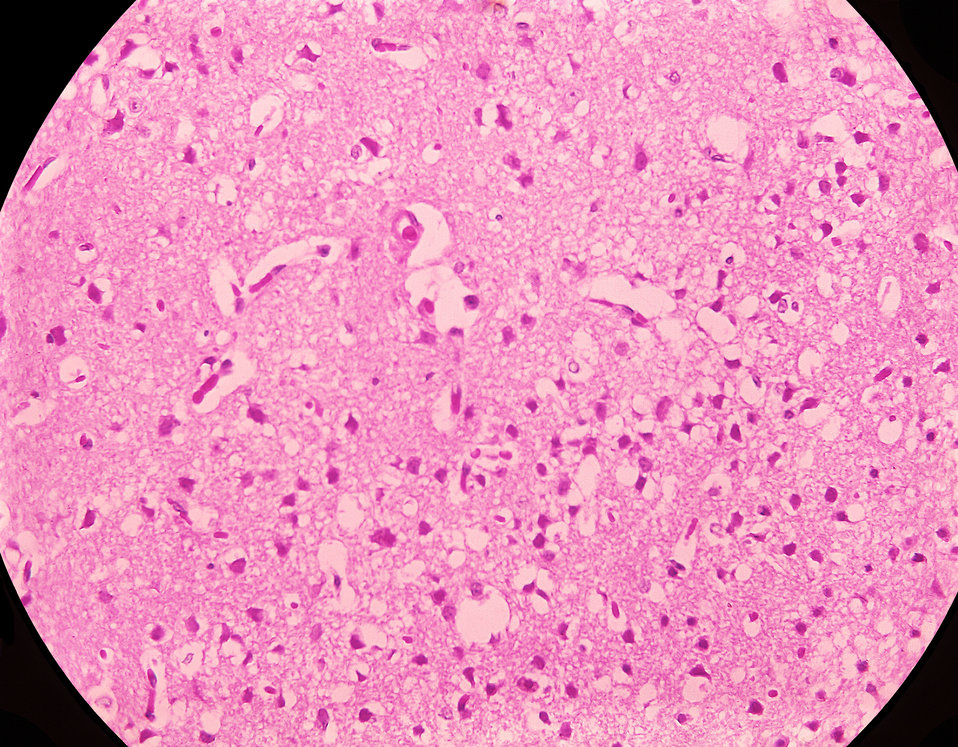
Magnified 300X, this photomicrograph of mouse brain tissue after dying of Venezuelan Encephalitis reveals neural necrosis and edema.